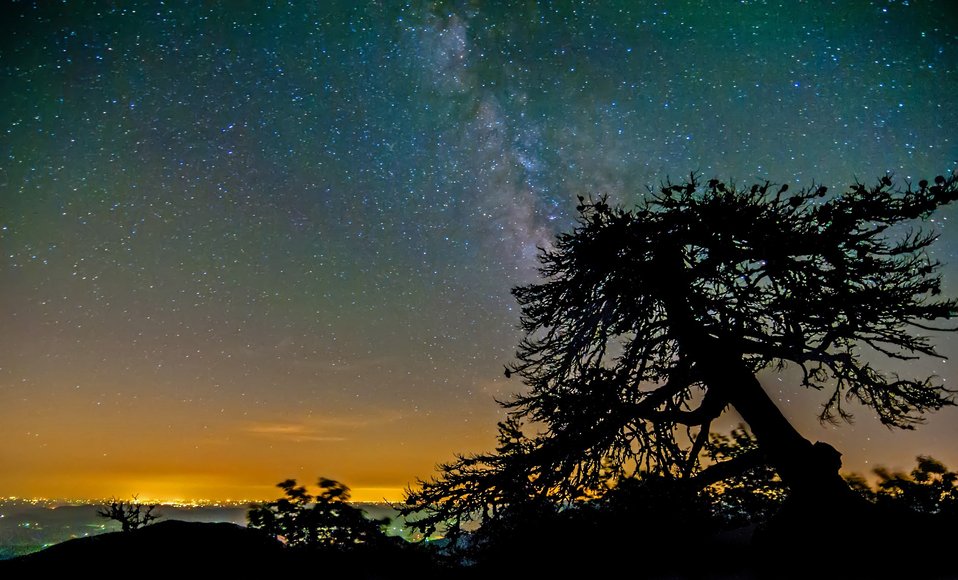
Night sky in mountains.